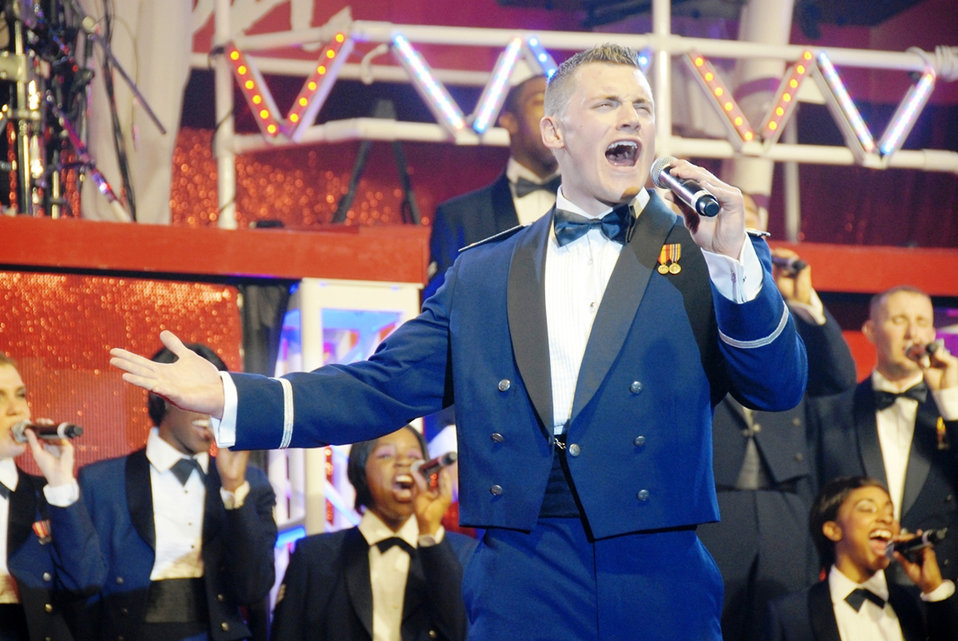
Tops in Blue set to kick off 'Rhythm Nation' tour

Second Lt. Robert Doyle sings the lead for a patriotic song during the group's dress rehearsal May 20, 2011, at Lackland Air Force Base, Texas. The 2011 Tops in Blue team is set to kick off their 'Rhythm Nation' tour with a performance May 25, 2011, at Barksdale Air Force Base, La. The show provides a glimpse of a century of popular music and how it grew through new rhythms and technology. Lieutenant Doyle is a 2011 Tops in Blue vocalist and the officer in charge. He is an acquisitions program manager from Vandenberg Air Force Base, Calif.